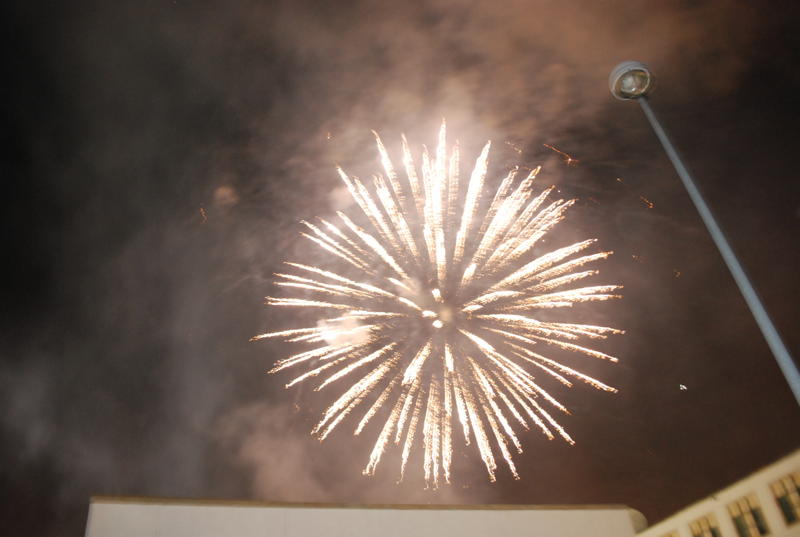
U.S. Independence Day Fireworks Light Up the Bogotá Skies

For nearly twenty minutes, Bogotá's skies lit up with fireworks during the U.S. Independence Day reception at the U.S. Embassy Bogotá in Colombia, on July 2, 2010.